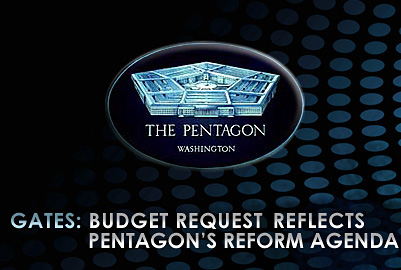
Gates: Budget request